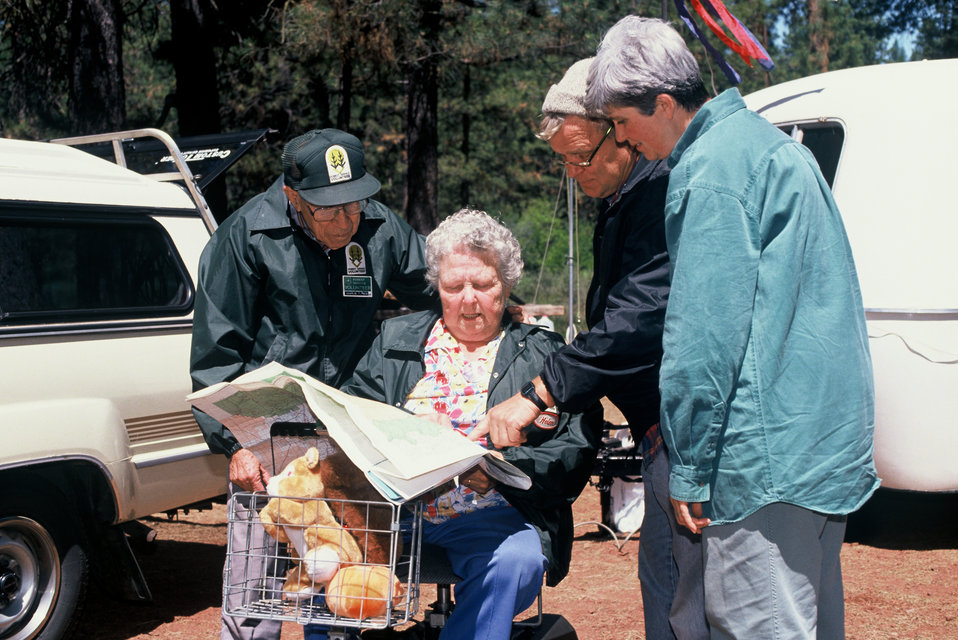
U.S. Forest Service volunteer assists campers at the Gifford Pinchot National Forest in WA in May 1995.